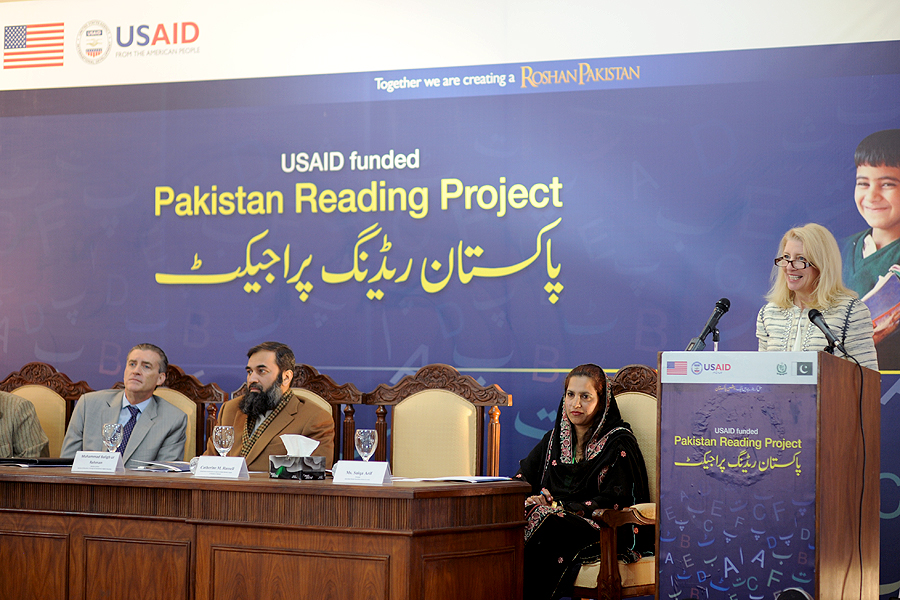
United States and Pakistan Launch the Pakistan Reading Project